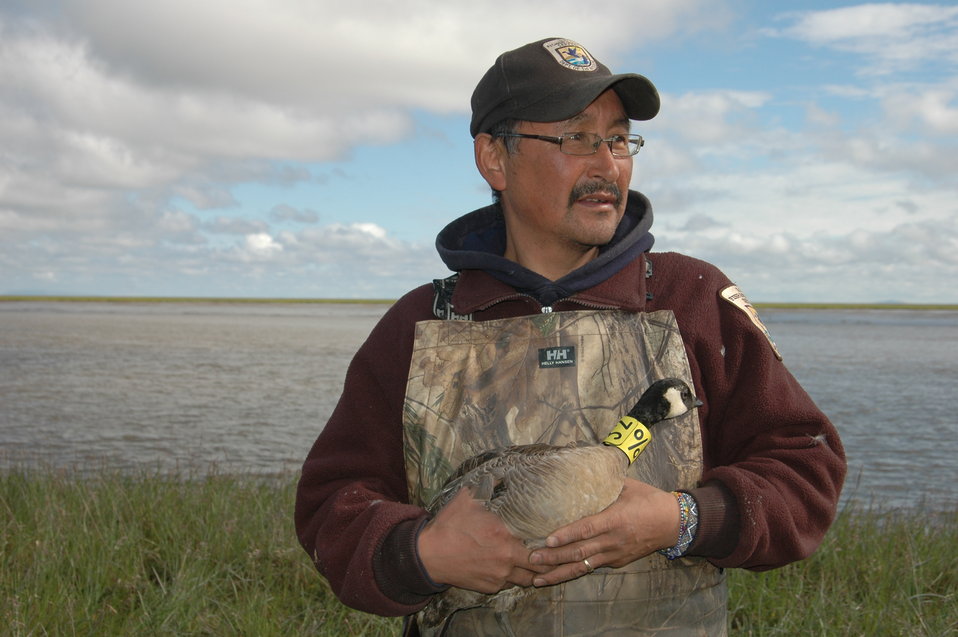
Collared

A group of biologists, volunteers, biotechs, refuge staff, migratory bird management staff, etc joined forces to band and collar cackling cackling geese on the Yukon-Kuskokwim Delta.

USFWS Yukon Delta NWR